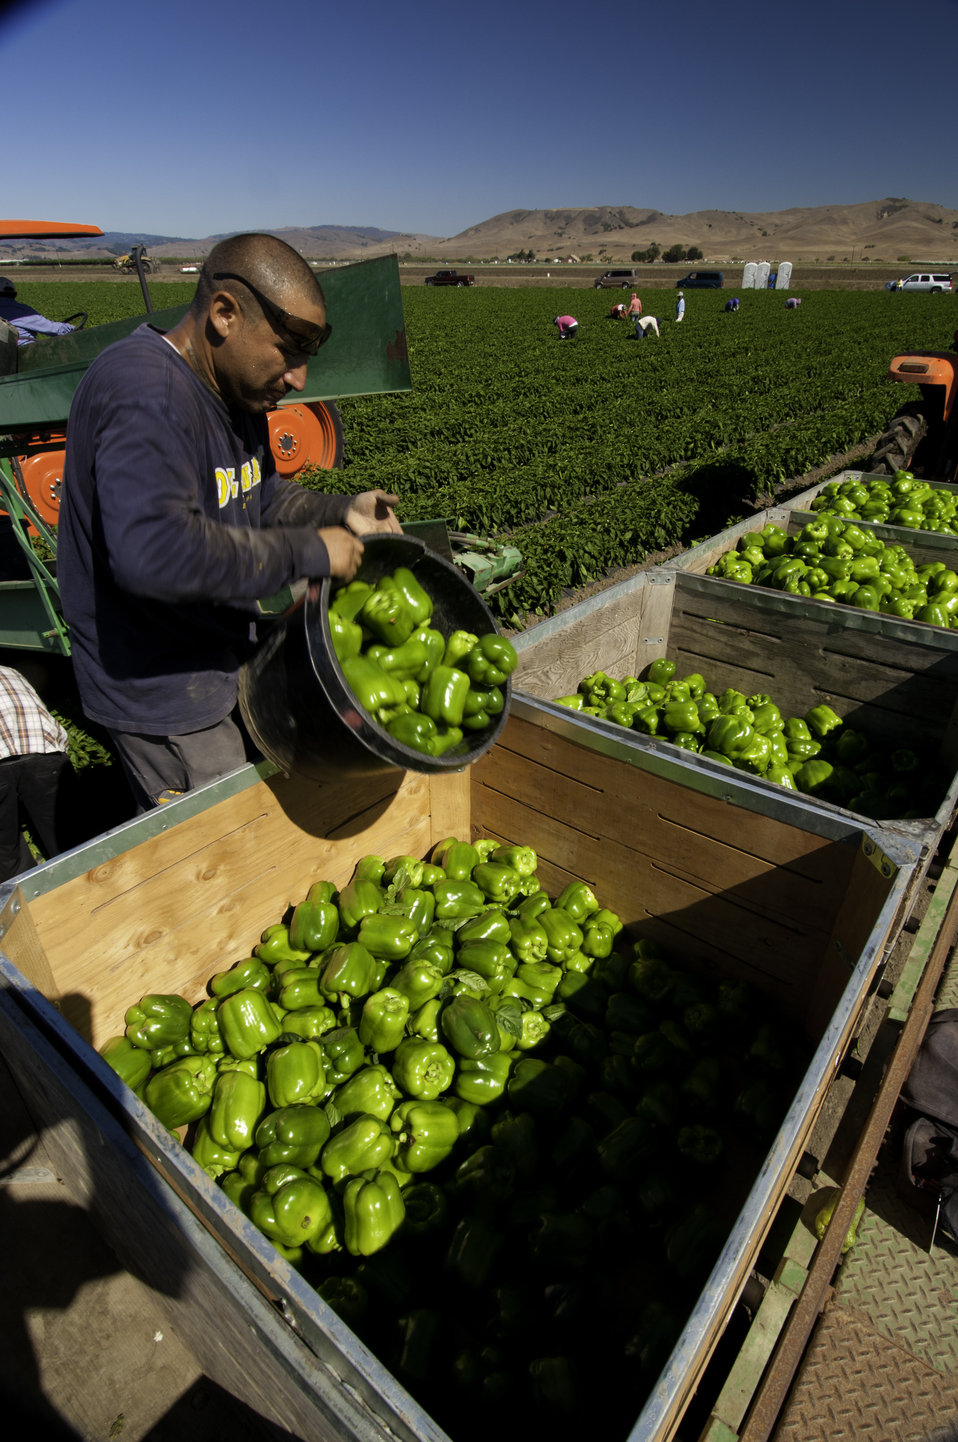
Migrant workers harvest green peppers on Uesugi Farms in Gilroy, CA on Wednesday, Aug. 28, 2013.